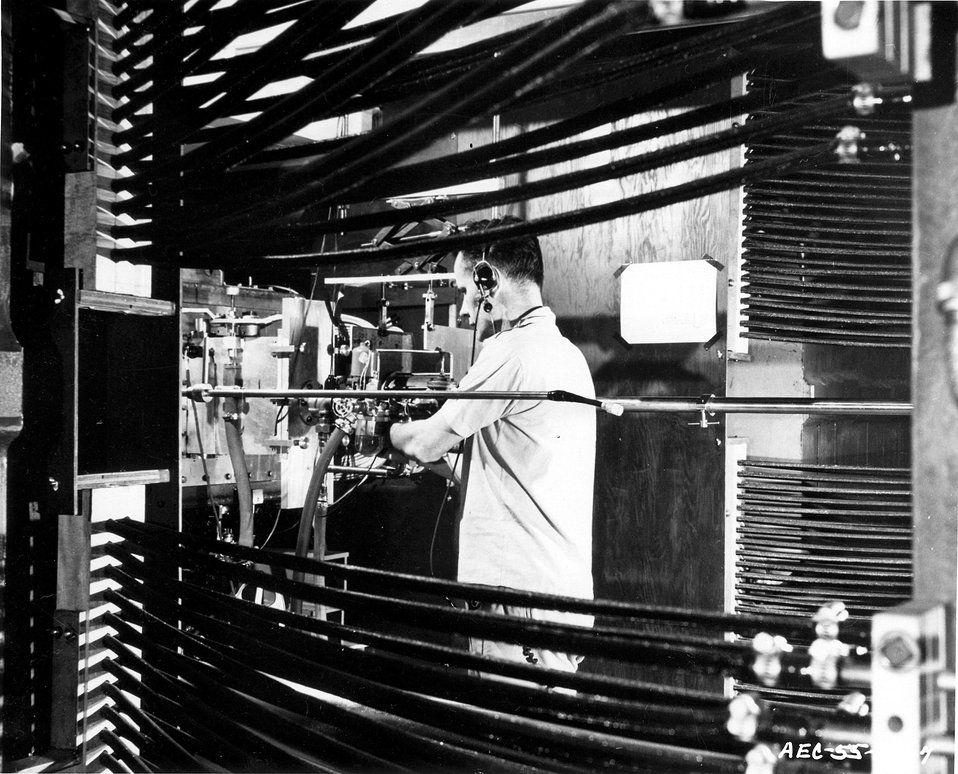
Targets to be bombarded are inserted into the proton beam of the Brookhaven Cosmotron by means of an air look.